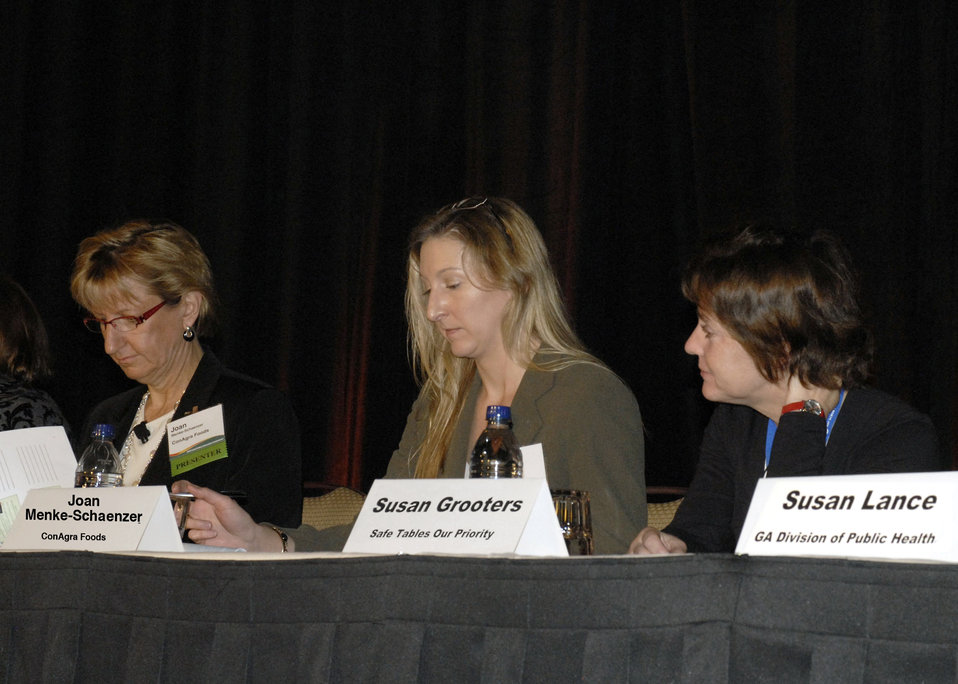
Panelists at the Plenary II, Part 2 Session on Causes and Casualties: Gathering, Analyzing, and Learning from the Data (L to R Joan Menke-Schaenzer, ConAgra Foods, Susan Grooters, Safe Tables Our Priority (STOP), and Susan Lance, Georgia Division of Public Health) participate in educational discussions at the Food Safety Education Conference held in Atlanta, GA., on Mar. 24, 2010. USDA photo 10di1284-10